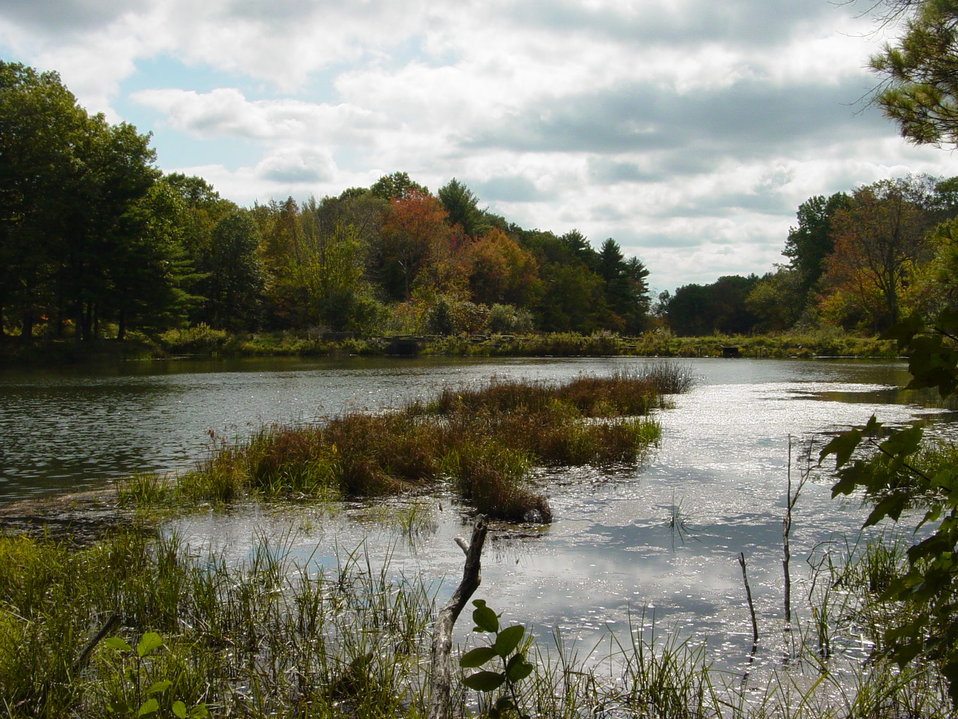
Peverly Pond at Great Bay National Wildlife Refuge, Newington, NH.